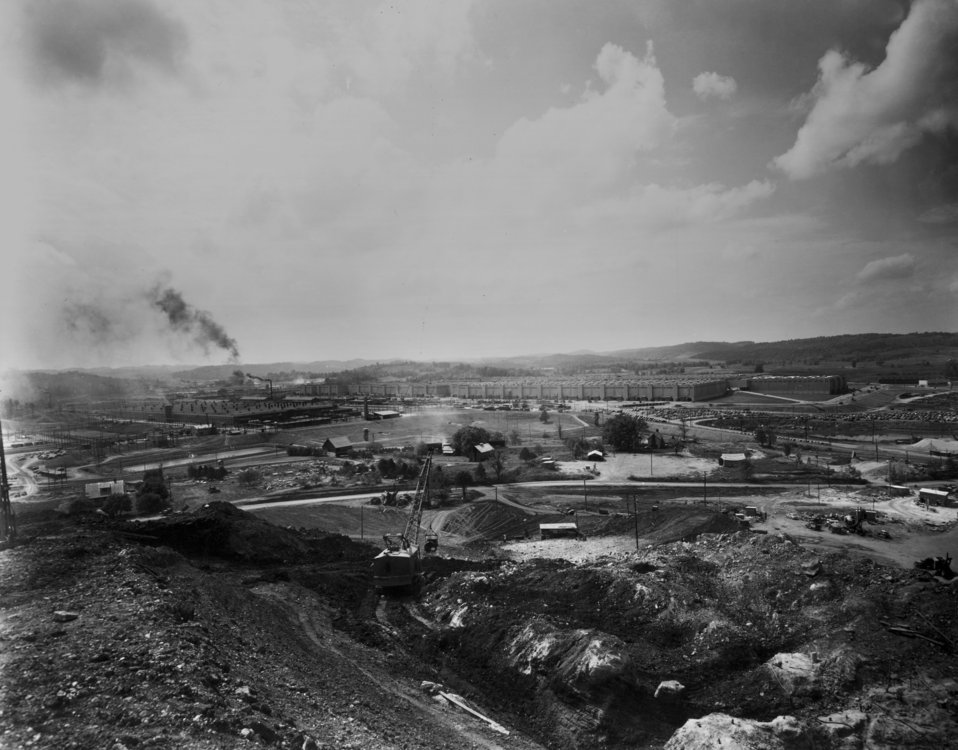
Construction Progress Process Building “U” K-25 From Quarry Hill Oak Ridge

k-25-340 DOE Photo by Ed Westcott Oak Ridge Tennessee 1946